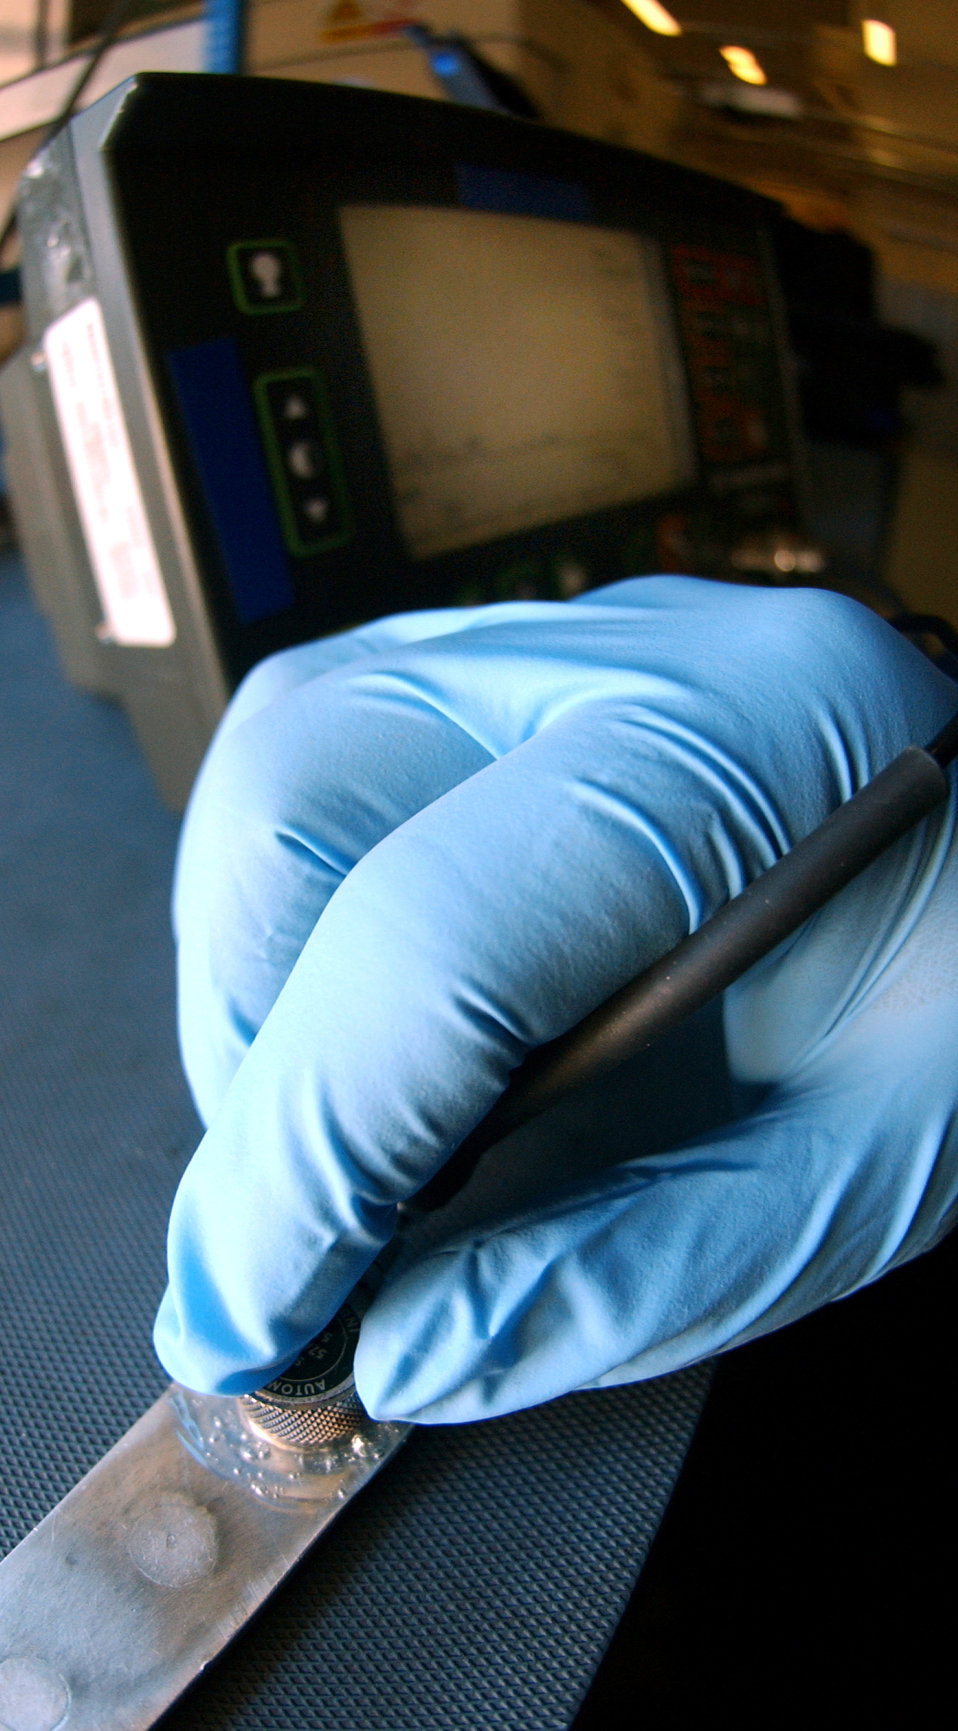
Non-destructive inspection

The subsurface of aircraft parts are checked for cracks and defects with an ultrasound unit at Royal Air Force Base Mildenhall, England, on Tuesday, June 20.